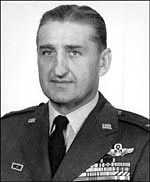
Col. Francis S. Gabreski

Francis